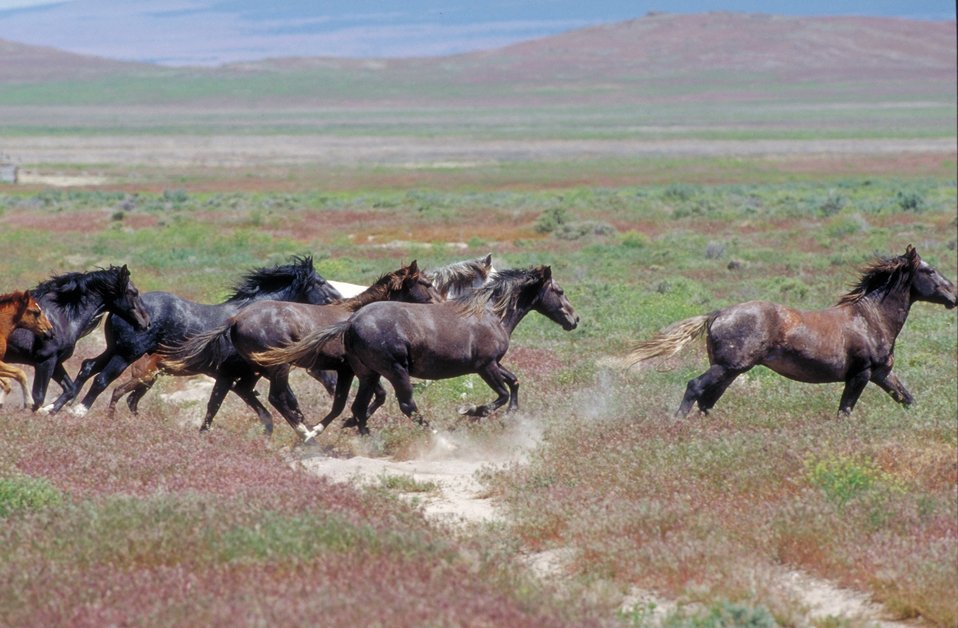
Onaqui Herd near Dugway, Utah.